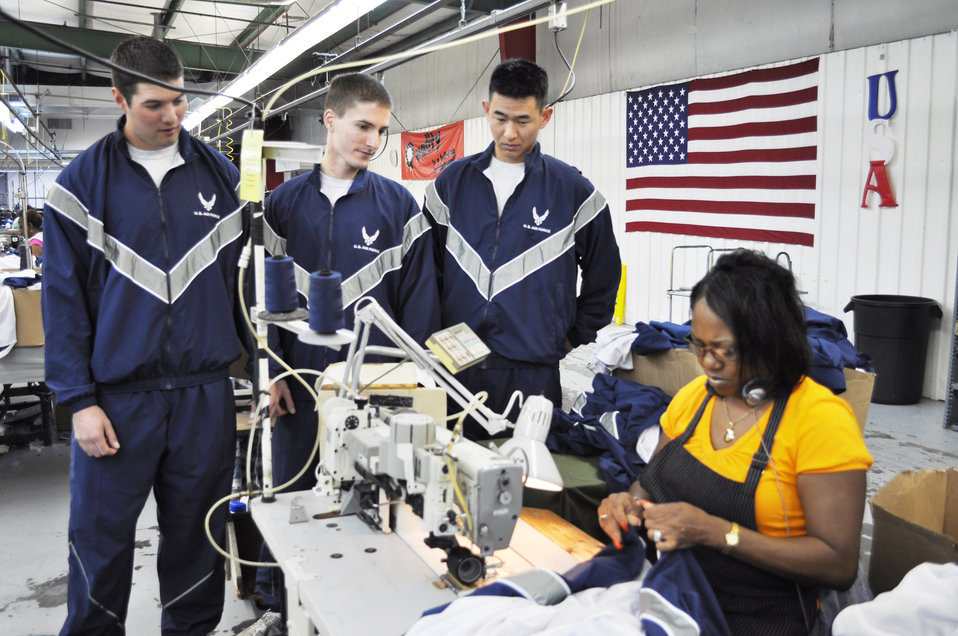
Physical training uniform made in America

1st Lts. Joseph Castro, Erik Svendsen and Andy Lee wear the Air Force's improved physical training uniform and watch as Angela Smith hems the anti-microbial liner into the new uniform during a tour of the facility Nov. 3, 2009, in Columbus, Miss. The lieutenants are from the 14th Operations Support Squadron at Columbus Air Force Base, Miss. Ms. Smith is an American Power Source seamstress.